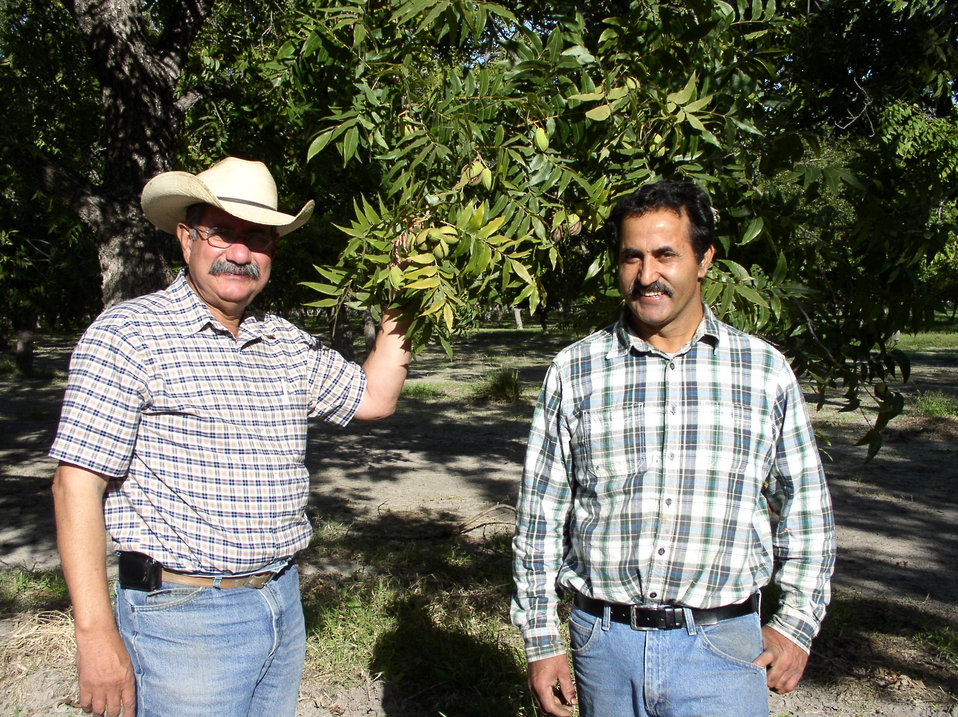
U.S. Department of Agriculture (USDA) Natural Resources and Conservation Service (NRCS) District Conservationist J.M. Villarreal (left) and Arrowhead Farms owner Akram Mohammad show off the Grade 1 pecans that were grown this year using micro irrigation drip watering system on his farm in Crystal City, TX, on Friday, September 9, 2011. The micro irrigation system feeds water to the roots of 4,380 pecan trees on 146 acres. Mr. Mohammad said, “USDA (U.S. Department of Agriculture) was essential to my business and trees surviving the recent exceptional drought. The trees were stress free thanks to underground micro-irrigation. This is essential to the future growth of Texas agriculture and good for America.” U.S. Department of Agriculture’s (USDA) Environmental Quality Initiative Program (EQIP) awarded Mr. Mohammad a $130,000 grant in 2008. He provided $26,000 for the balance of the $156,000 total cost to install a 146-acre underground micro-irrigation for 4,380 trees.